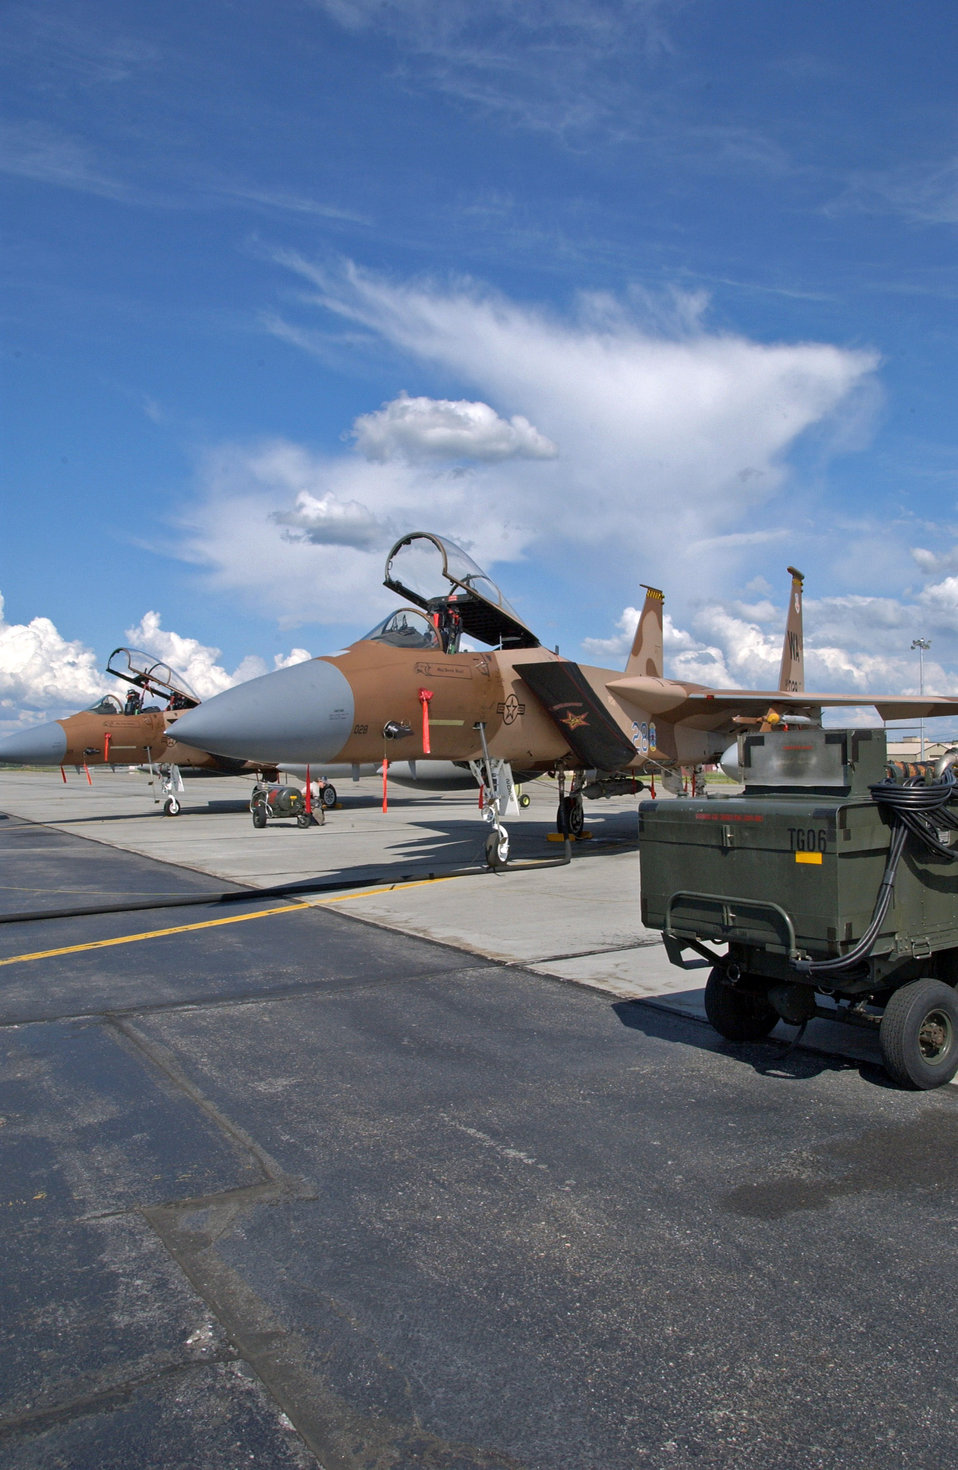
Red Flag-Alaska 07-3

F-15 Eagles from the 65th Aggressor Squadron at Nellis Air Force Base, Nev., sit parked on the Eielson AFB, Alaska, flight line July 9. The 65th AGS is taking part in Red Flag-Alaska 07-3, a multi-service, multi-platform coordinated, combat operations exercise, which runs through the July 27.